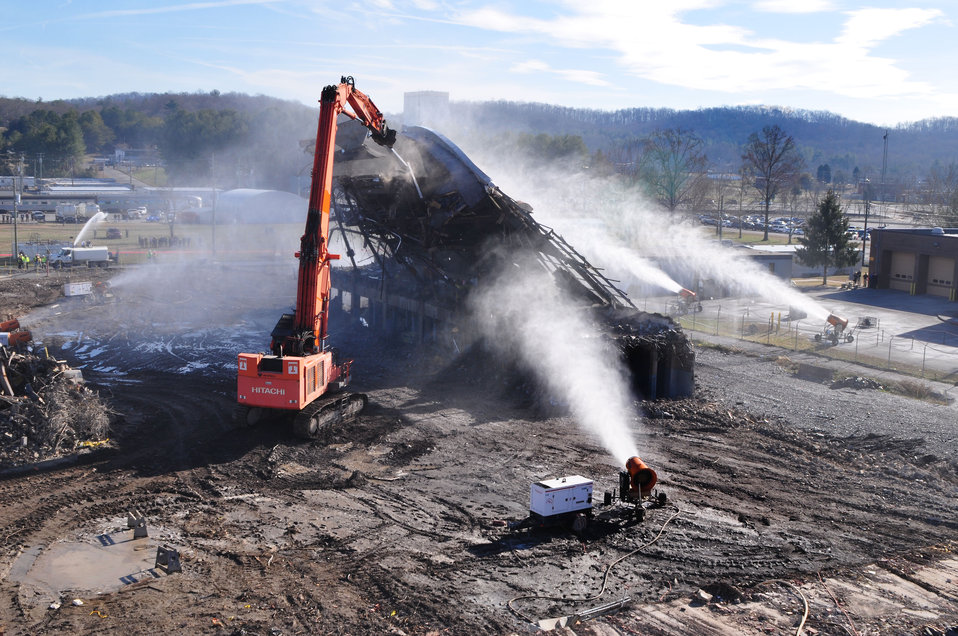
Last Part of K-25 Coming Down Oak Ridge 2013

13-157-1 DOE photo Lynn Freeny 12-19-2013 Oak Ridge Tennessee